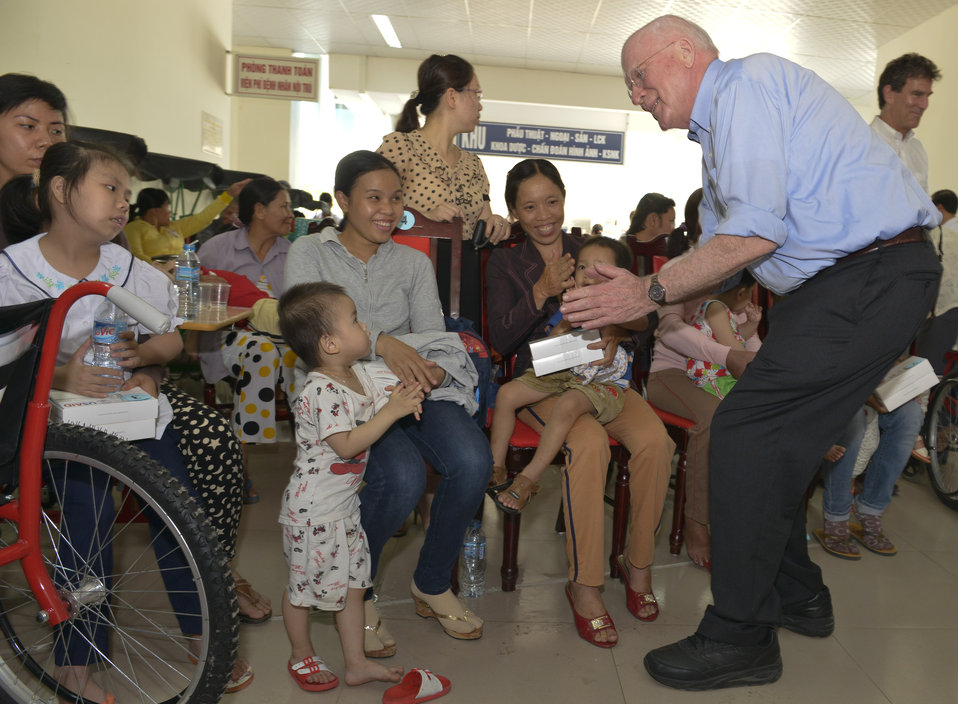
U.S. Congressional delegation attends a wheelchairs and hearing aids distribution event in Danang

Hoa Vang District Hospital, Danang, April 19, 2014.